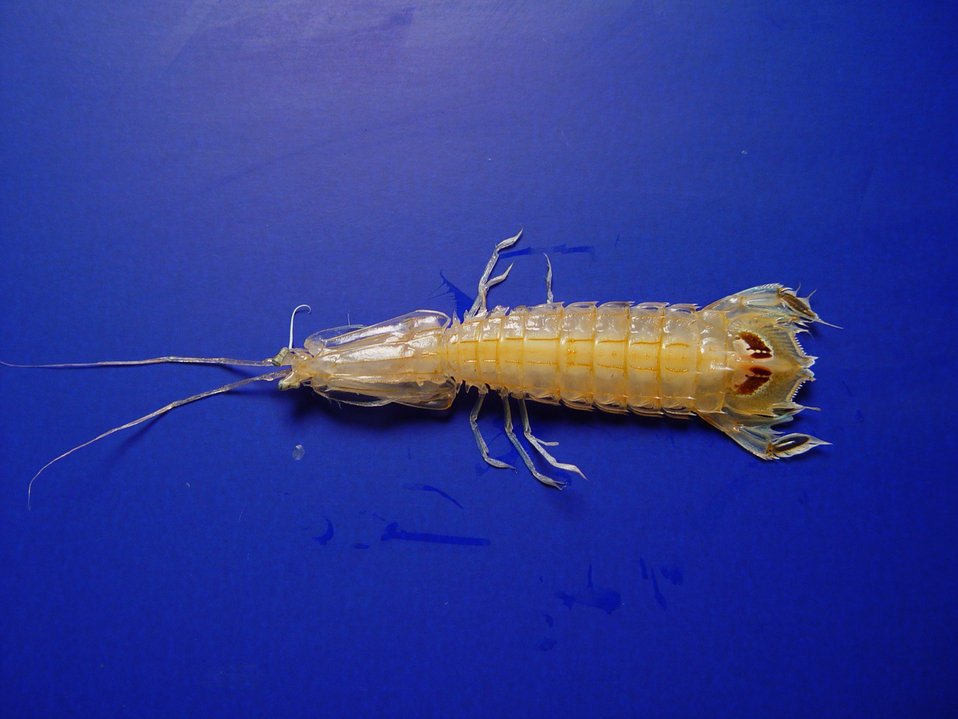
A species of mantis shrimp ( Squilla chydaea )